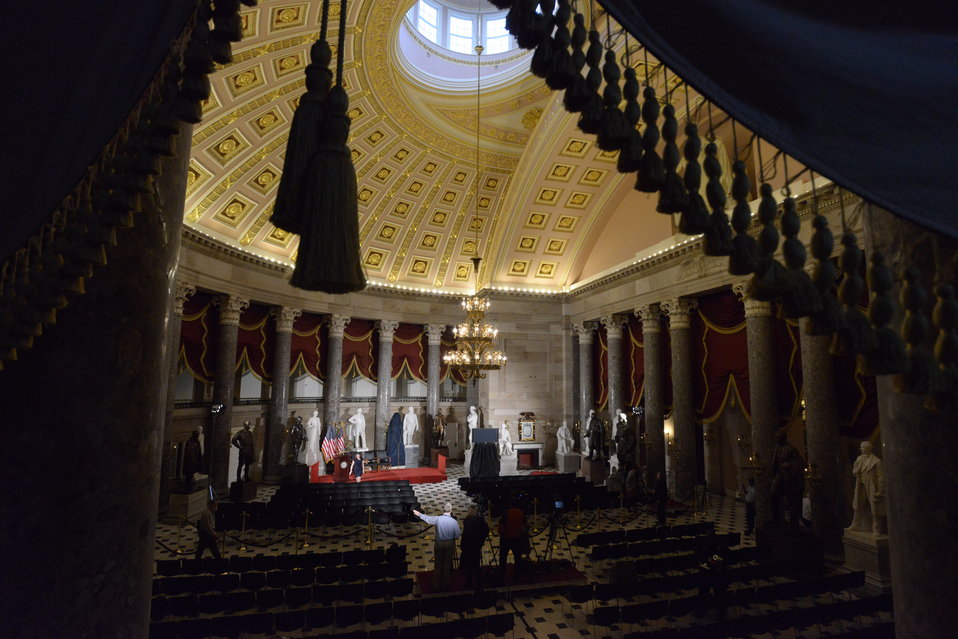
Interior of the National Statuary Hall at the U.S. Capitol in Washington, D.C. as preparations are made for the unveiling of the Dr. Norman Borlaug statue on Tuesday, Mar. 25, 2014.